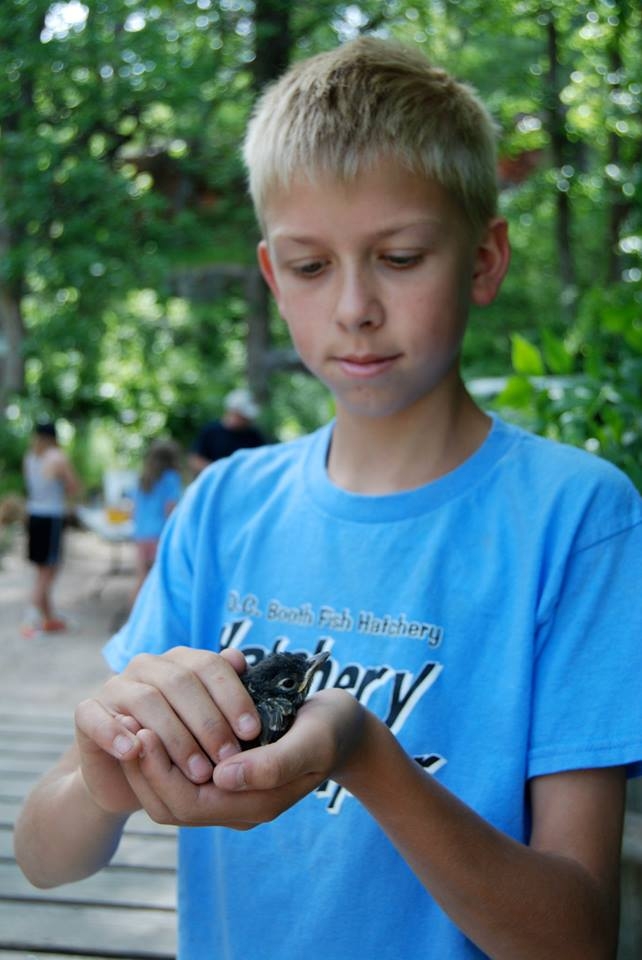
Connor Speirs gently releases a young robin that was banded during an educational Hatchery Helper session. Each summer a university ornithologist travels to D.C. Booth from SDSU to teach the Helpers about birds.